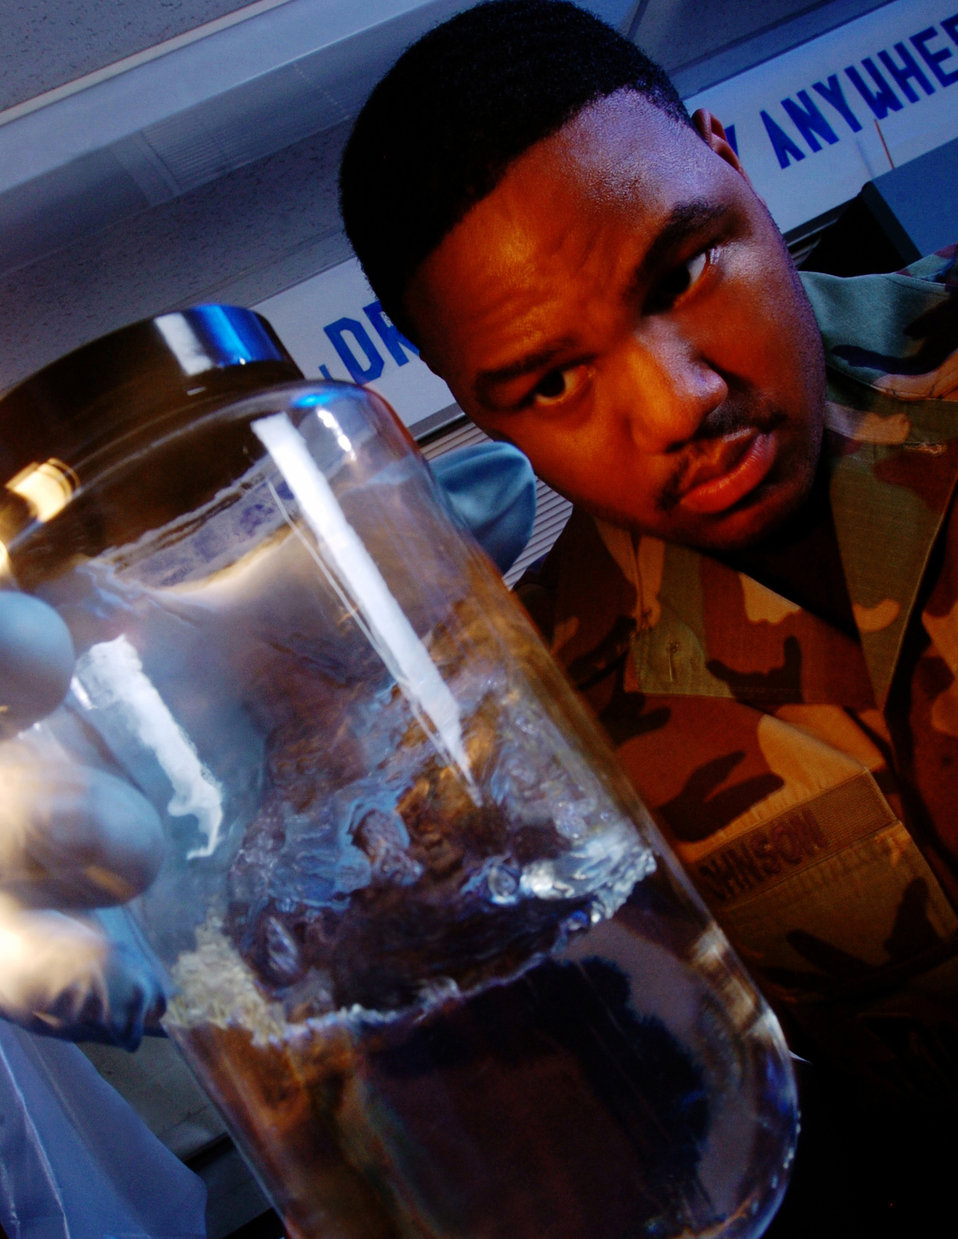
Fuels test

YOKOTA AIR BASE, Japan -- Staff Sgt. Carmarius Johnson conducts a test of a fuel sample here June 14. The test ensures that fuel is free of particulates and solid contents. Sergeant Johnson is a fuels laboratory technician with the 374th Logistics Readiness Squadron.